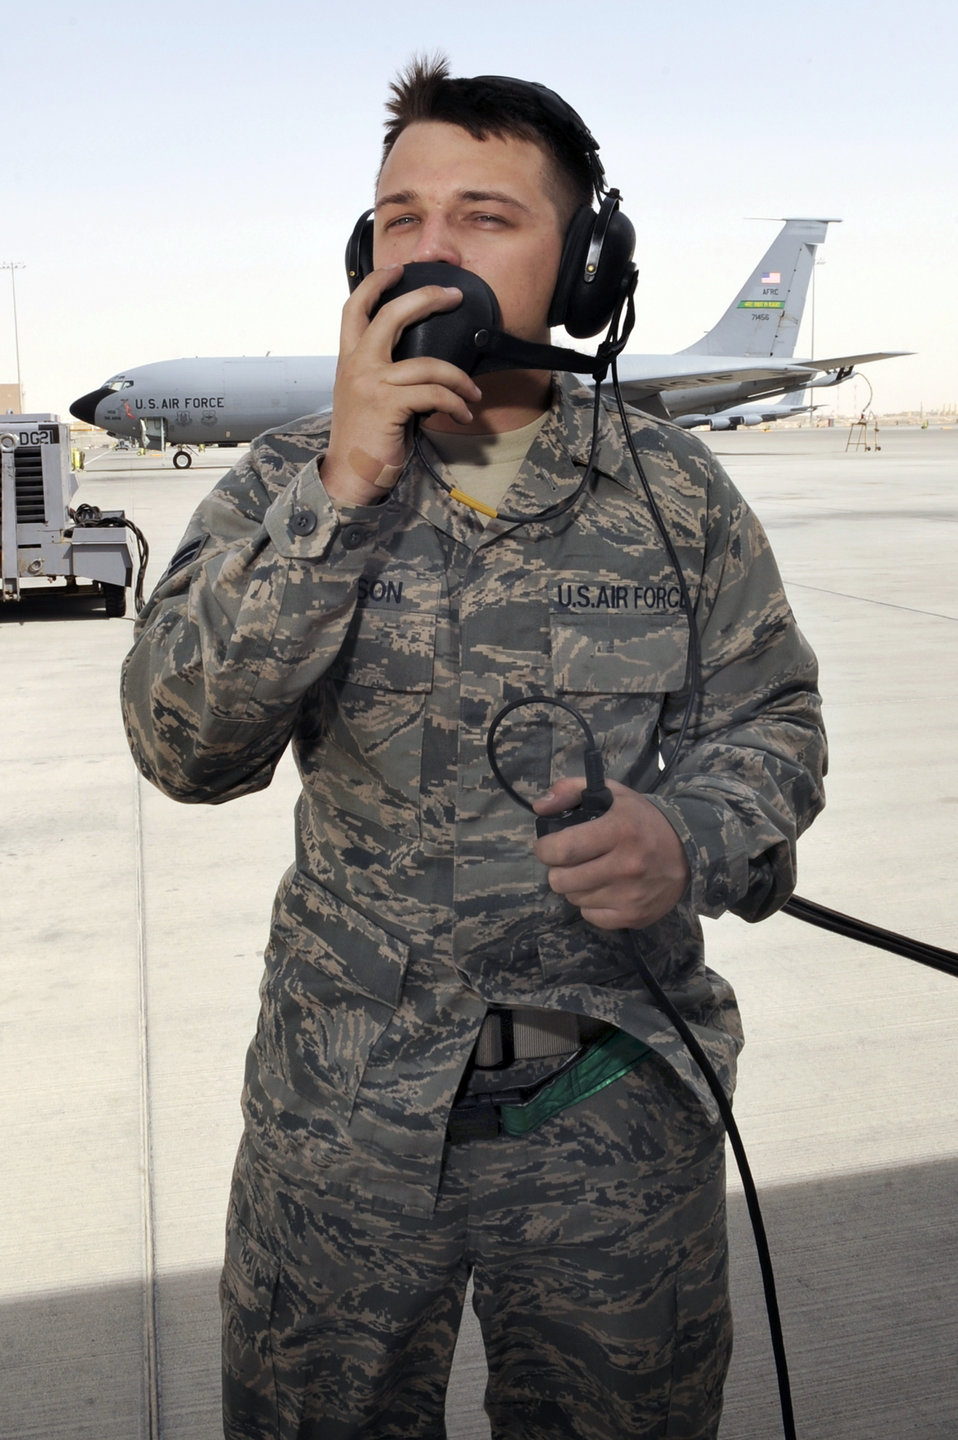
Refuelers keep mission soaring

Airman 1st Class Justin Simpson, a crew chief with the 379th Expeditionary Aircraft Maintenance Squadron at an air base in Southwest Asia, talks with the pilot of a KC-135 Stratotanker via headset during the preflight check before a refueling mission. Airman Simpson serves as the